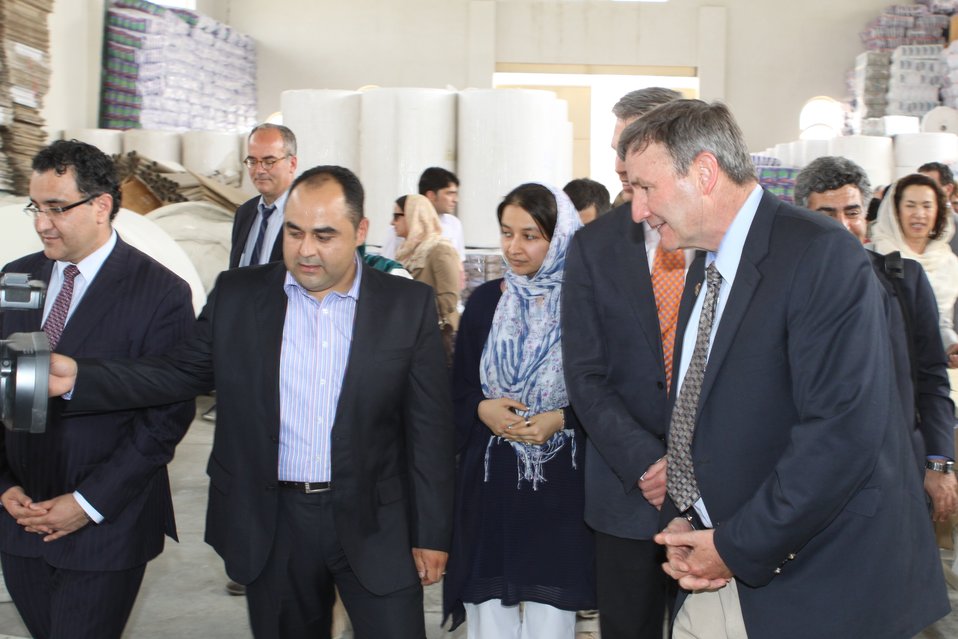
100525 Hirat Marble Conference 803